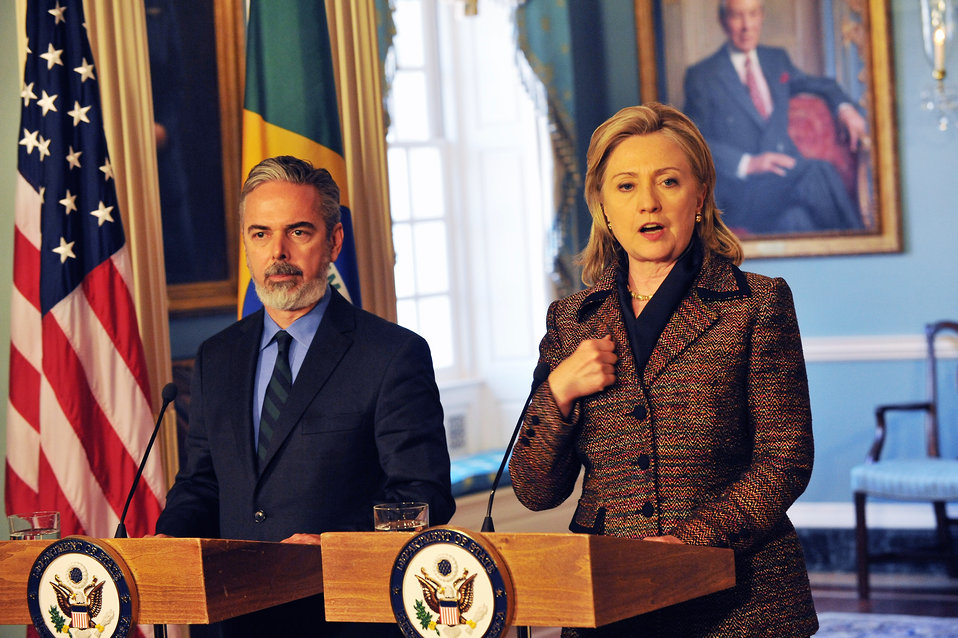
Secretary Clinton Holds a Joint Press Conference With Brazilian Foreign Minister Patriota

U.S. Secretary of State Hillary Rodham Clinton holds a joint press conference with Brazilian Foreign Minister Antonio Patriota at the U.S. Department of State in Washington, D.C., on February 23, 2011.